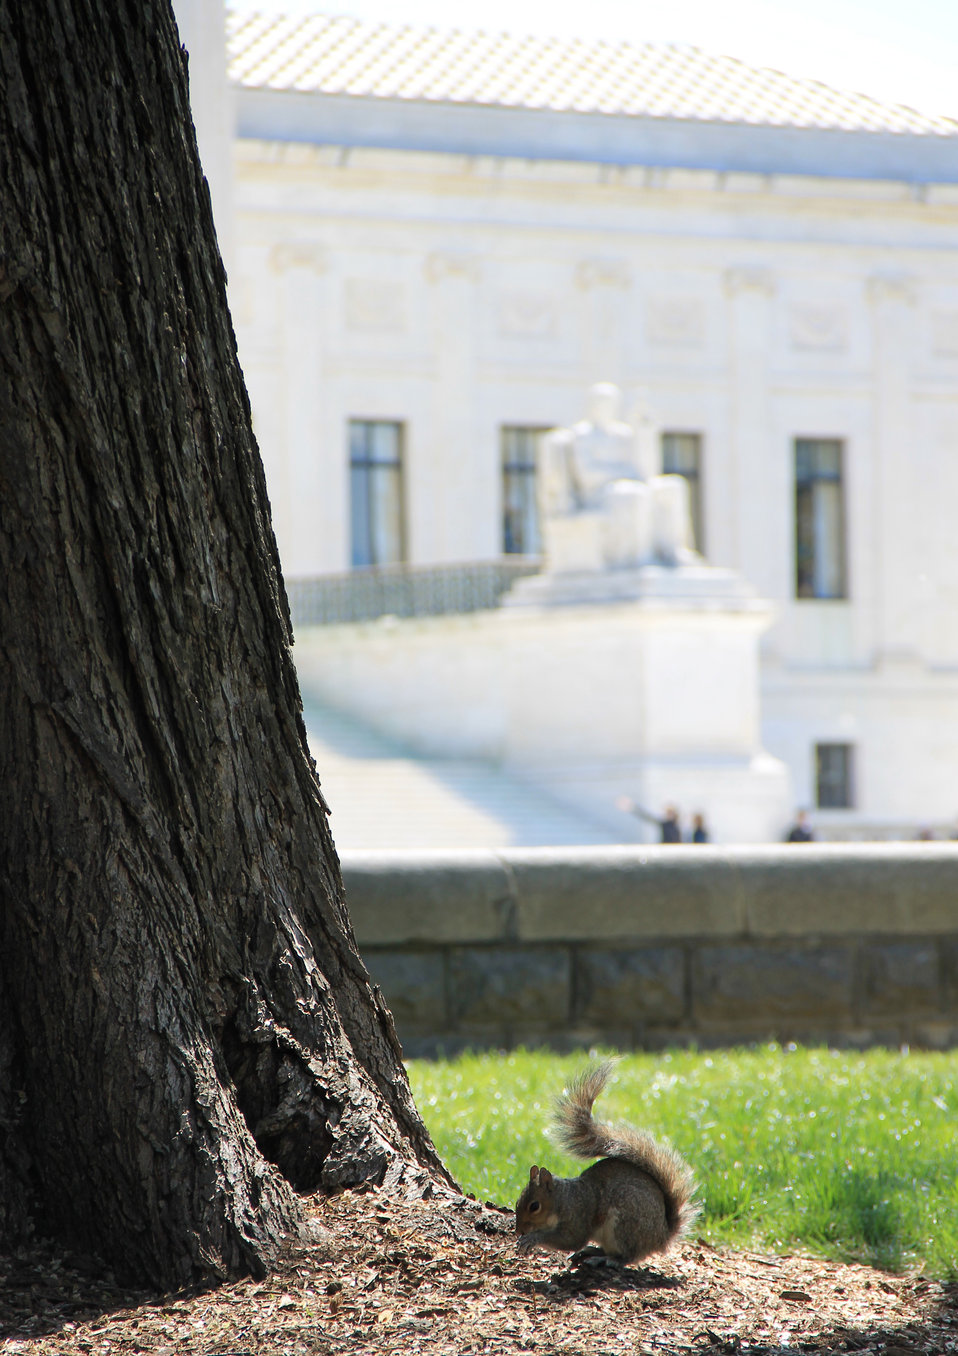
Squirrel in front of the U.S. Supreme Court

The AOC has recently uncovered 113 years of history surrounding squirrels on Capitol Hill: www.aoc.gov/cc/grounds/Squirrels-on-the-Capitol-Grounds.cfm.